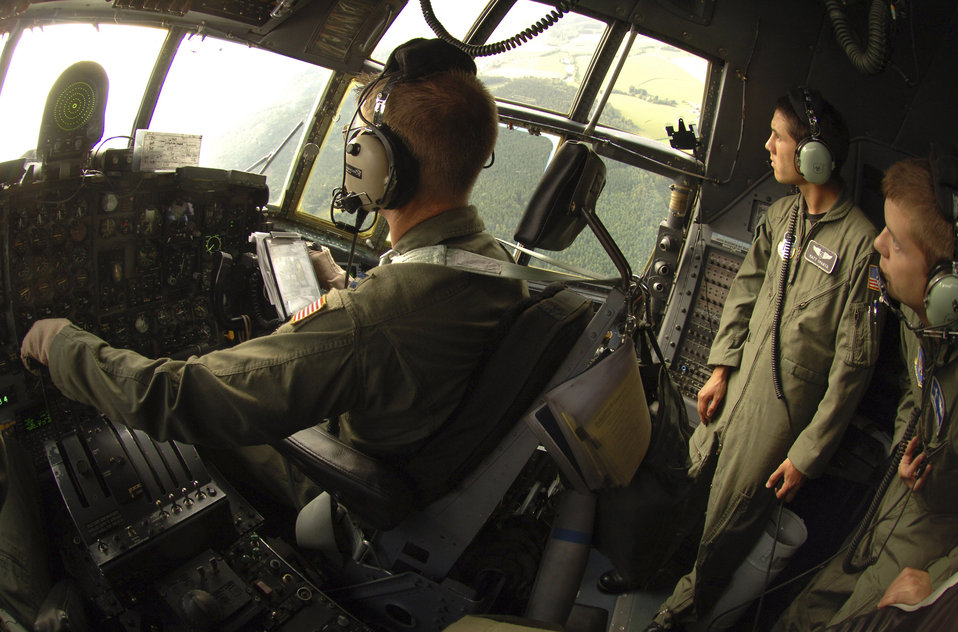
Follow the checklist

C-130 Hercules pilot, Capt. Kent Jensen, and navigator, Capt. Michael Trimble, (far right) provide Air Force Academy Cadet 1st Class Matt Sparta with a view of central Germany. About 80 cadets visited Ramstein Air Base, Germany, to gain experience in a job shadow program.